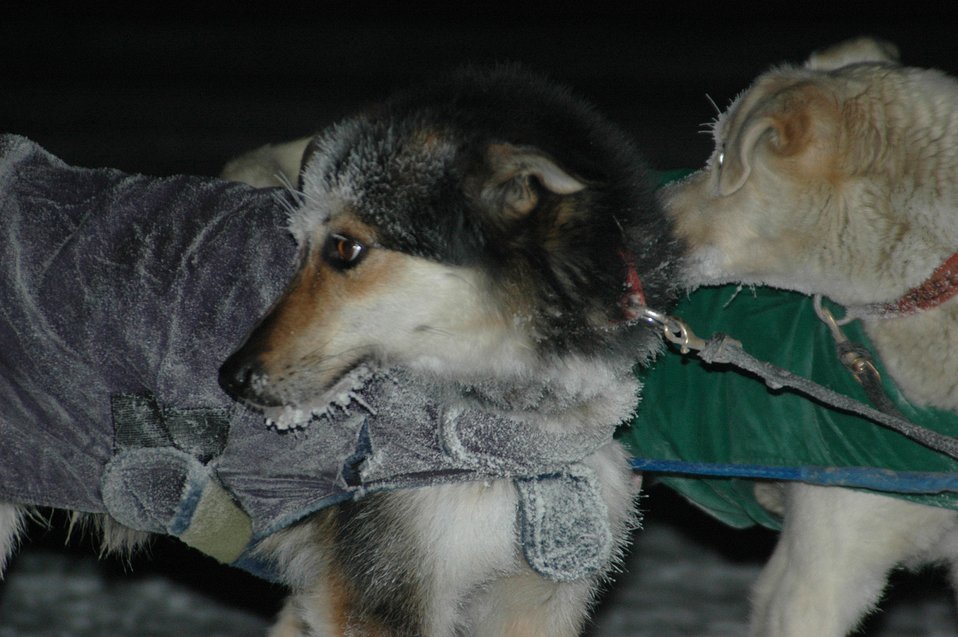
Eielson Airmen help keep mushers, dogs in race

Sled dogs from musher William Kleedehn's dog sled team wait for a check up at the Dog Drop in North Pole. The Dog Drop is the last checkpoint before mushers and their teams cross the Yukon Quest finish line in Fairbanks. The Yukon Quest is a 1,000-mile international dog sled race held annually in Alaska. Mushers race through territory from Whitehorse to Fairbanks.